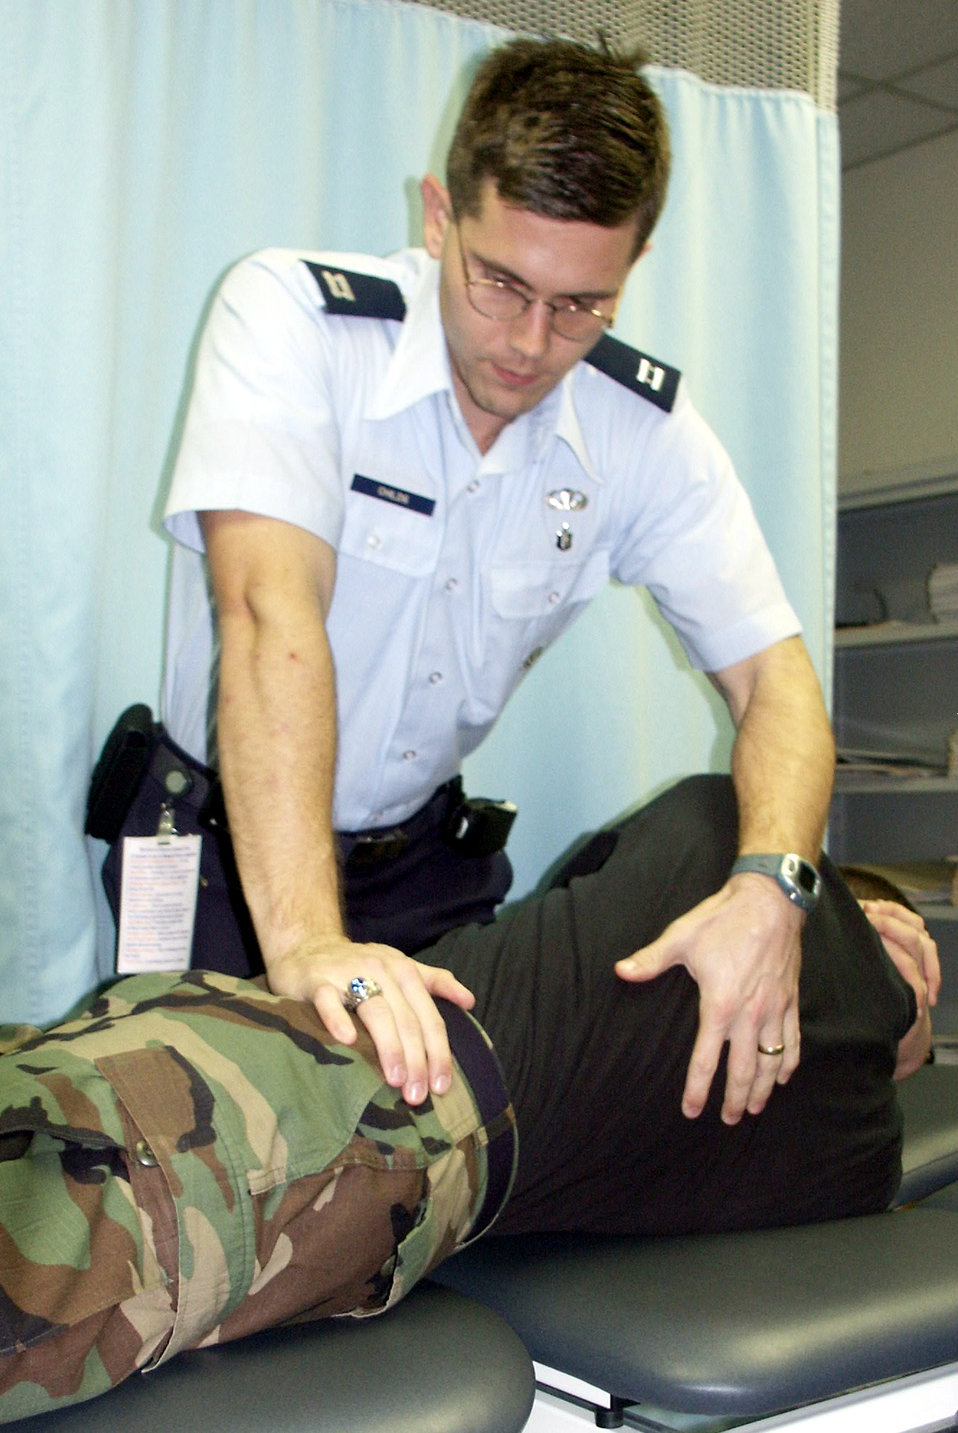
Childs' play

LACKLAND AIR FORCE BASE, Texas -- Capt. John Childs, a Wilford Hall Medical Center physical therapist here, demonstrates a spinal manipulation technique on Capt. Benjamin Hando. Captain Childs is leading a studying designed to determine what techniques work most effectively in treating lower back pain.